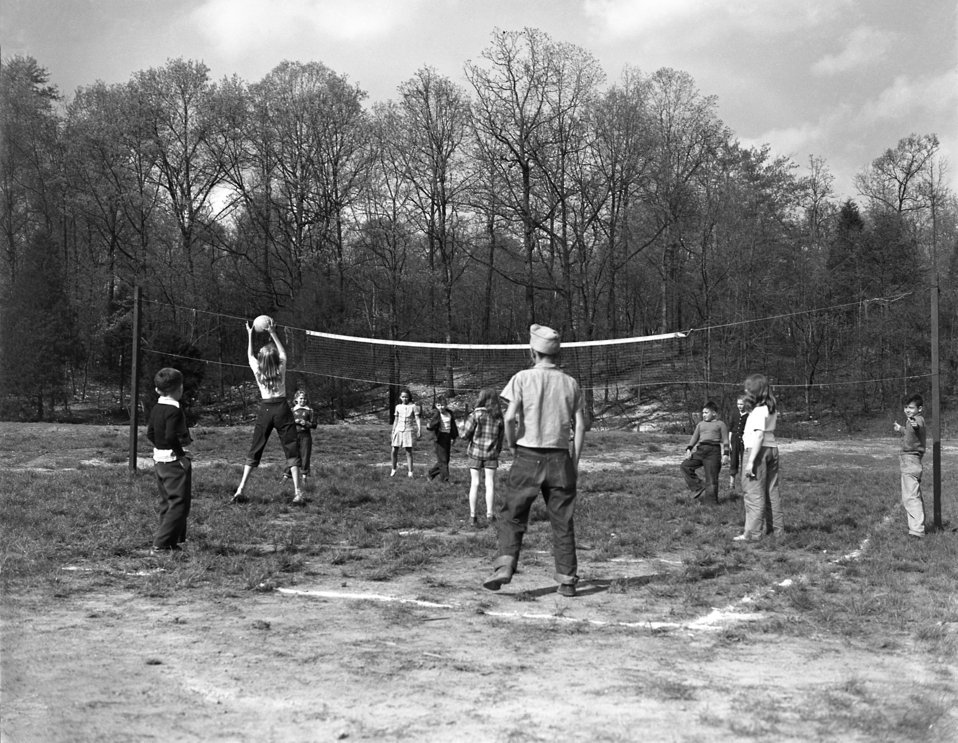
Volleyball Game Oak Ridge 1947

3414-12bb DOE photo Ed Westcott Oak Ridge Tennessee